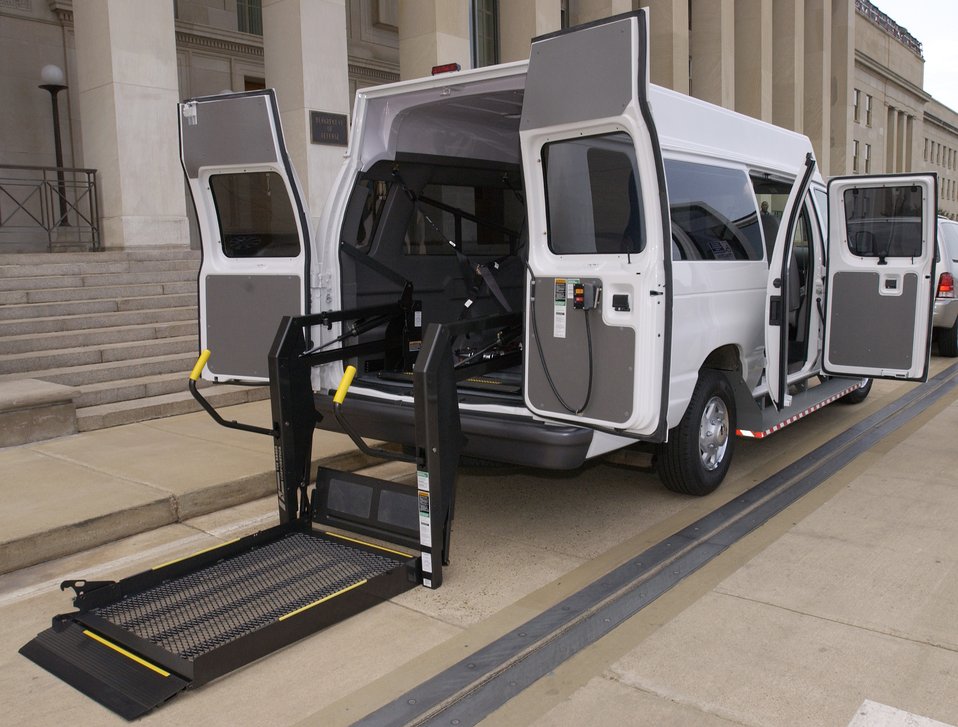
Donation provides mobility, honors Jumper

WASHINGTON -- Two vans were donated to Walter Reed Army Medical Center in Arlington, Va., in honor of Air Force Chief of Staff Gen. John P. Jumper and his wife, Ellen. Walter Reed staff will use one van for transporting wounded servicemembers, while the other van will be used by the various therapy programs to teach wheelchair bound servicemembers or amputees how to drive with their injuries.